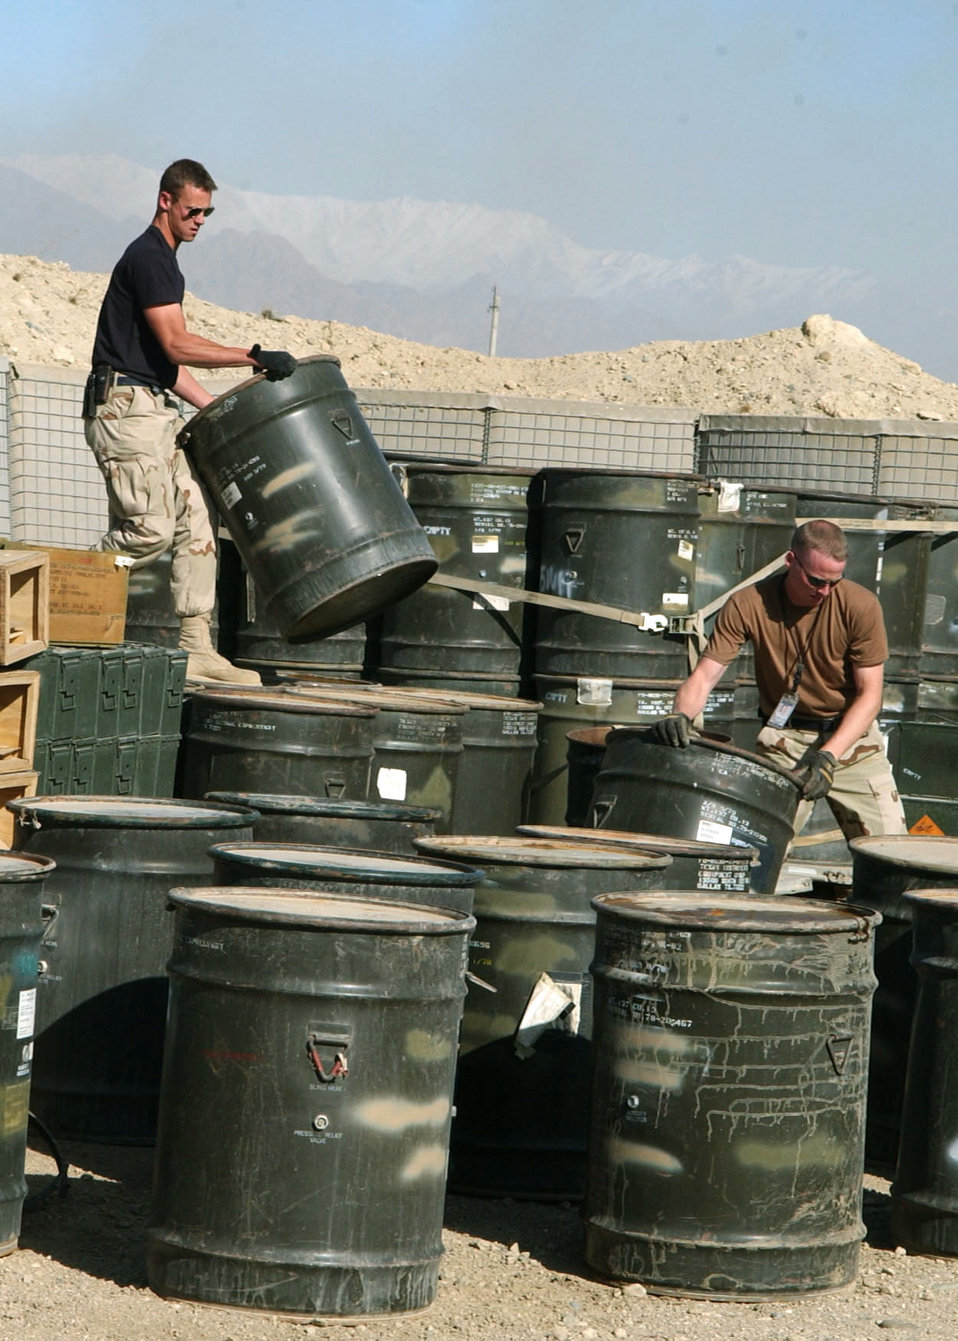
Bagram Airmen build bombs for better tomorrow

BAGRAM AIR BASE, Afghanistan -- Airman 1st Class Daniel Sewell (left) and Staff Sgt. Zachary Daugherty inspect and sort ammunition storage containers to ensure they are empty before they are crushed. The active-duty 455th Expeditionary Aircraft Maintenance Squadron ammunitions unit Airmen are deployed to Afghanistan from Spangdahlem Air Base, Germany.